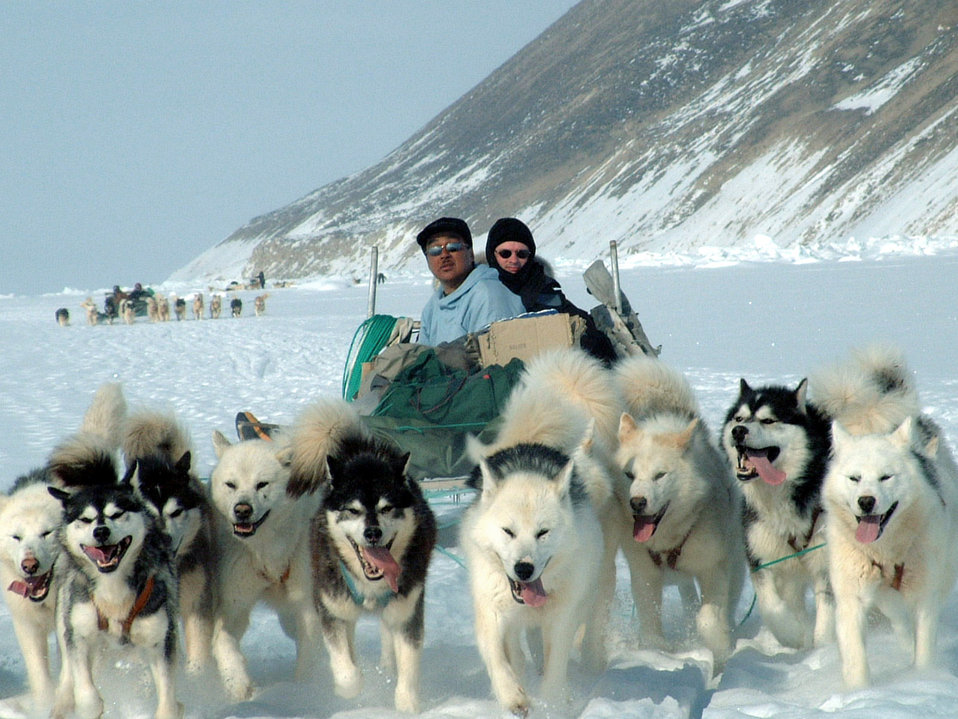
Three Airmen participate in dog-sled expedition

GREENLAND -- Otto (left) and 1st Lt. Lance Brenneke head toward home after a six-day dog-sledding expedition in northwest Greenland. Otto is a Greenlandic hunter, and Lieutenant Brenneke is assigned to the 821st Support Squadron at Thule Air Force Base, Greenland.